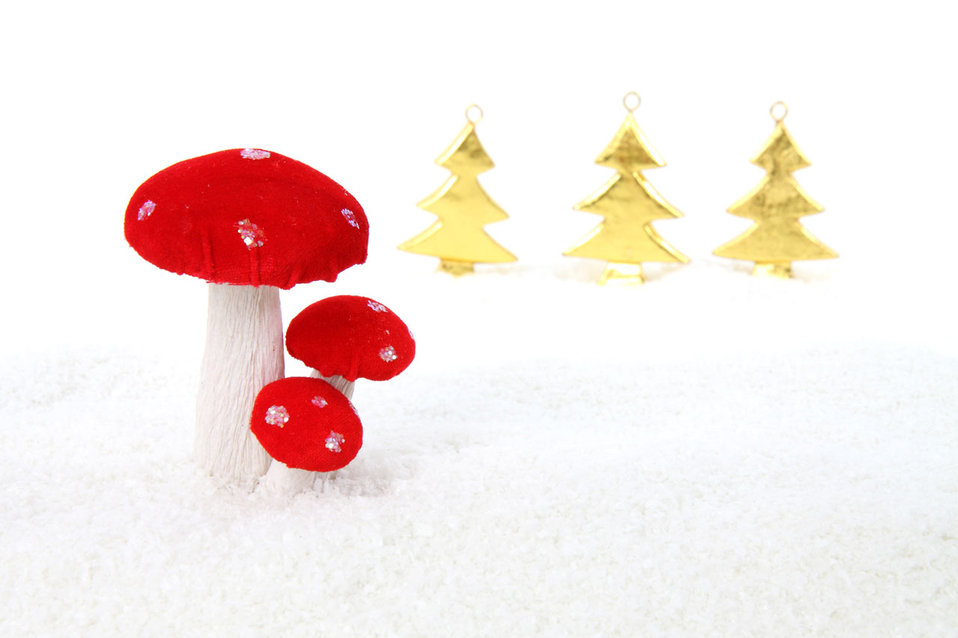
Christmas mushroom

Winter scene with christmas decorations.